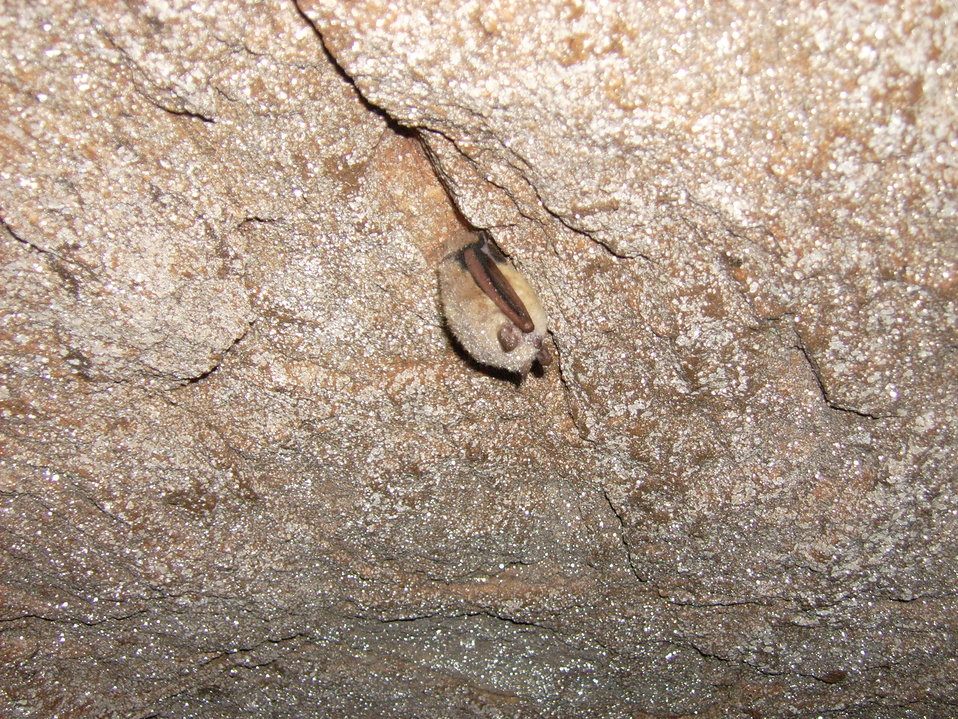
Eastern pipstrelle with water crystallization

An eastern pipistrelle bat with crystallization in Limekiln Cave.